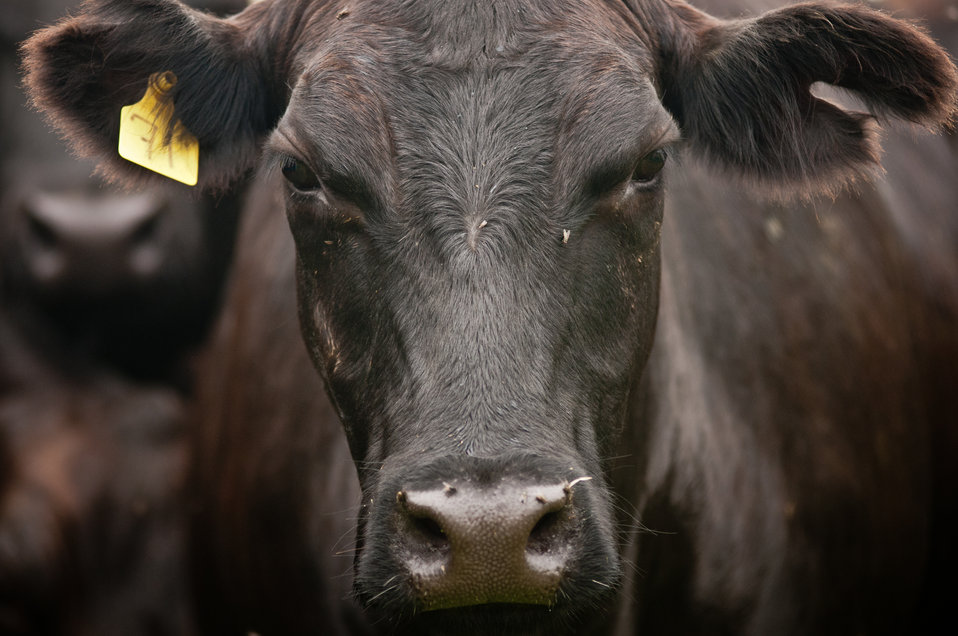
Black Angus cows and calves graze organic pastures, and for added nutrition and variety, they enjoy a daily feeding of sweet silage at Nick’s Organic Farm, owned by Nick Maravell, in Adamstown, MD on Friday, July 12, 2013. The white plastic wrapped bales of pasture grass and alfalfa have been fermenting for months to create sweet silage that stores well and can be used to feed cattle at varying amount all year long. The fermentation process sweetens the taste and increases the vitamin levels. The farm produces Black Angus beef, chicken, turkey, eggs, hay, soybeans, corn, alfalfa, orchard grass, rye; and other crops. The cattle are 100% grass-fed receiving certified organic pasture, certified organic hay (in winter), water and mineral salts mixed with sea kelp. The cattle are not fed hormones, antibiotics or animal products. Poultry feed from grain is ground from organic grain. The poultry also graze on organic pastures. The farm has conducted on-farm research with federal, state and non-profit agencies to refine organic practices. An organization such as the U.S. Department of Agriculture (USDA) Agricultural Research Service (ARS) center in Beltsville has been able to conduct research to improve organic crops and to breed and manage the cattle so that they have.